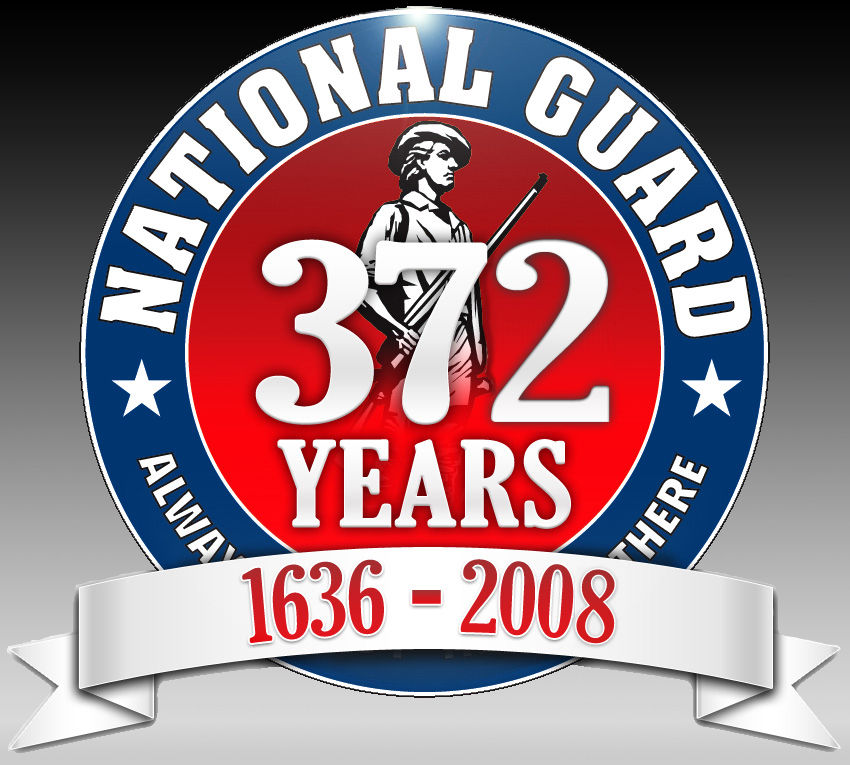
National Guard celebrates 372nd birthday

National Guard officials are celebrating their 372nd birthday Dec. 13 remembering when in 1636 the Massachusetts Bay Colony divided its citizen-soldiers, or militia, into the North, South and East Regiments. These units, in one form or another, have been in continuous service since 1636, and are the oldest units in the U.S. Army.